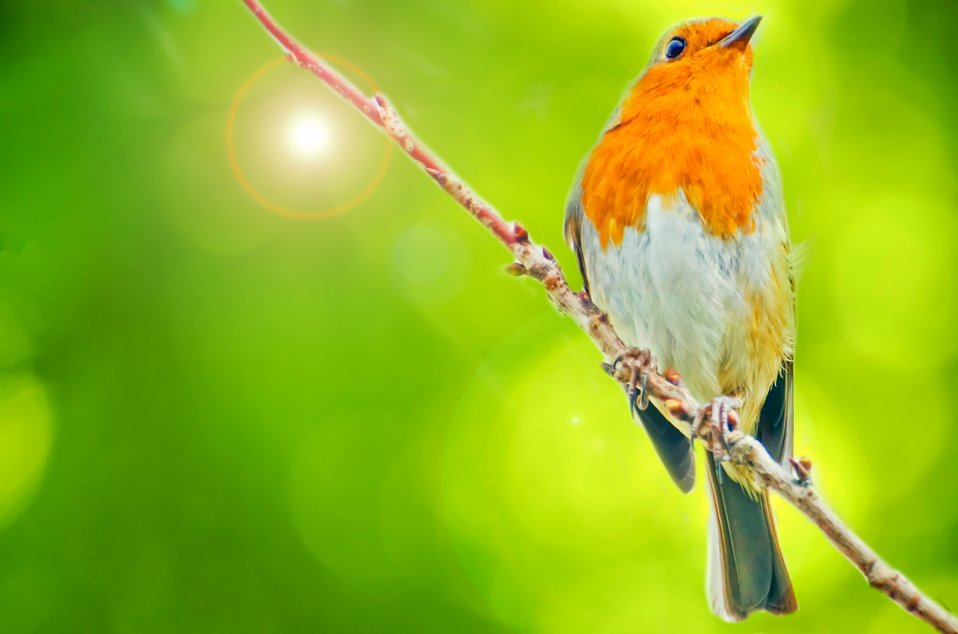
Bird - robin.